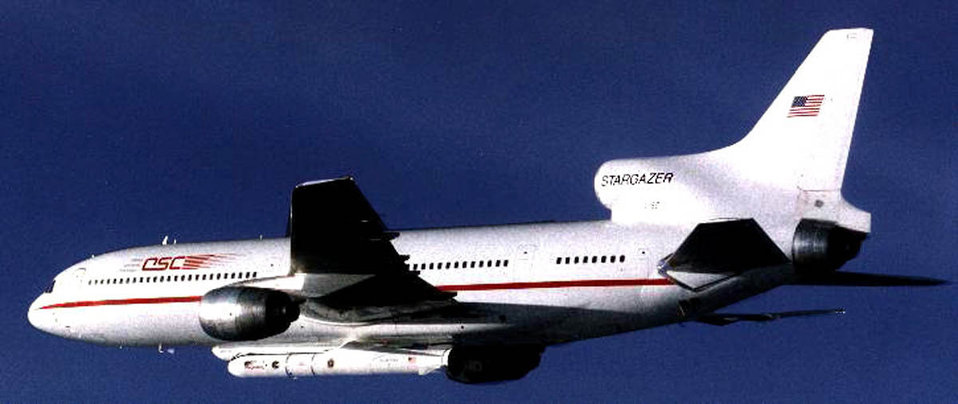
Pegasus

VANDENBERG AIR FORCE BASE, Calif. -- The L-1011 Stargazer with its Pegasus space launch vehicle uses the Western Range to launch satellites into a low earth orbit. The three-stage Pegasus launch vehicle is carried aloft by the company-owned L-1011 aircraft to a point approximately 40,000 feet over open ocean areas, where it is released and then free-falls in a horizontal position for five seconds before igniting its first stage rocket motor. With the aerodynamic lift generated by its delta wing, the small rocket achieves orbit hundreds of miles above the Earth in approximately ten minutes.